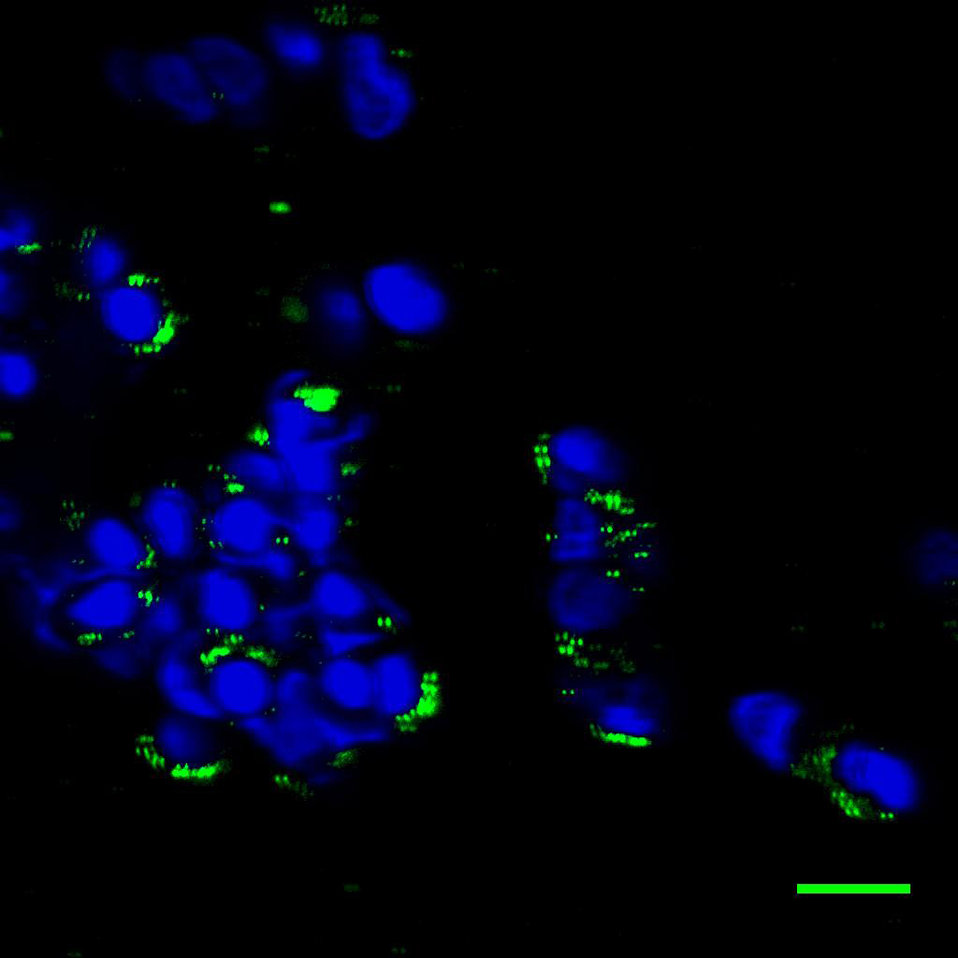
Quantum Dots

After four days, quantum dots still shine (green) in cells embedded in a hydrogel scaffold.